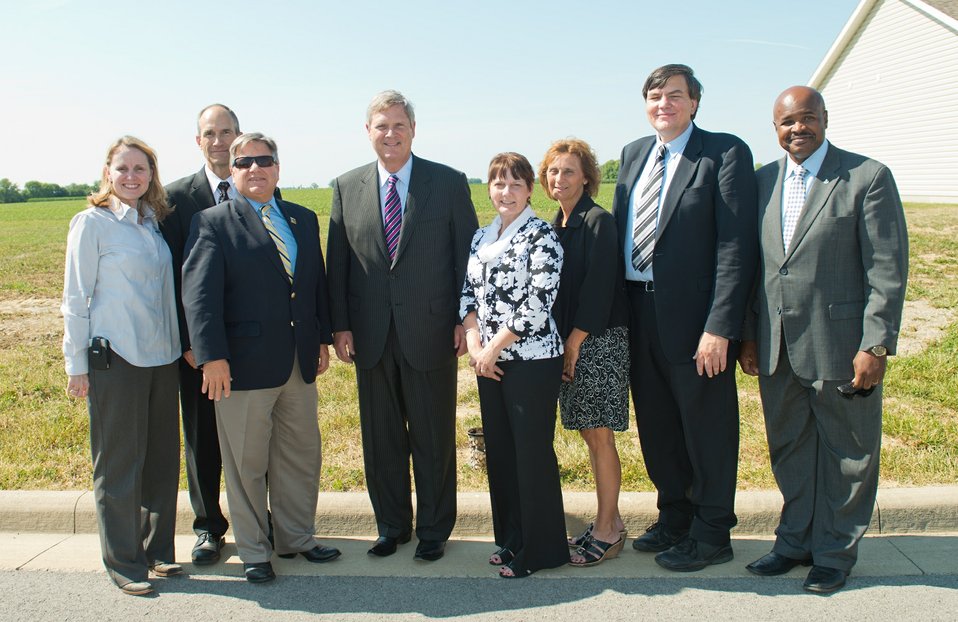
Agriculture Secretary Tom Vilsack stands with U.S. Department of Agriculture (USDA) Ohio Rural Development (RD) team members during a commemoration of National Homeownership Month at Arbor Village in Fayette County, OH on Thursday, June 28, 2012. (L to-R Public Information Coordinator Heather Hartley, Housing Program Director Gerald Arnott, State Director Tony Logan, Secretary Vilsack, Hillsboro Area Director (Acting) Linda Ayres-Louiso, Area Office Technician Rae Jean Maddux, Single Family Housing Specialist Mark Gideon, and Natural Resources Conservation Services (NRCS), Ohio State Conservationist Terry Cosby)